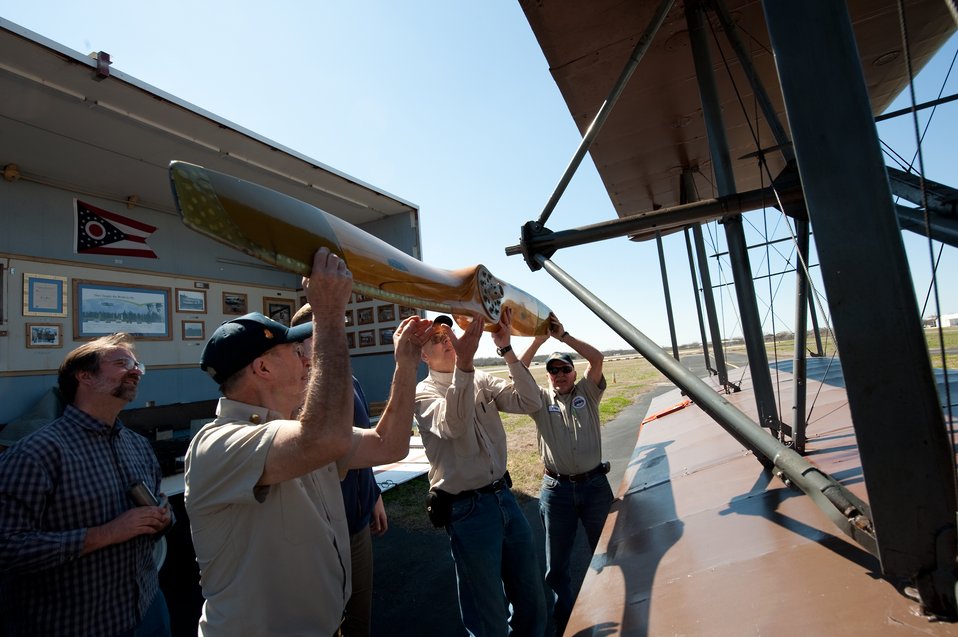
Wright

The second of two propellers is lifted to the power shaft Wright